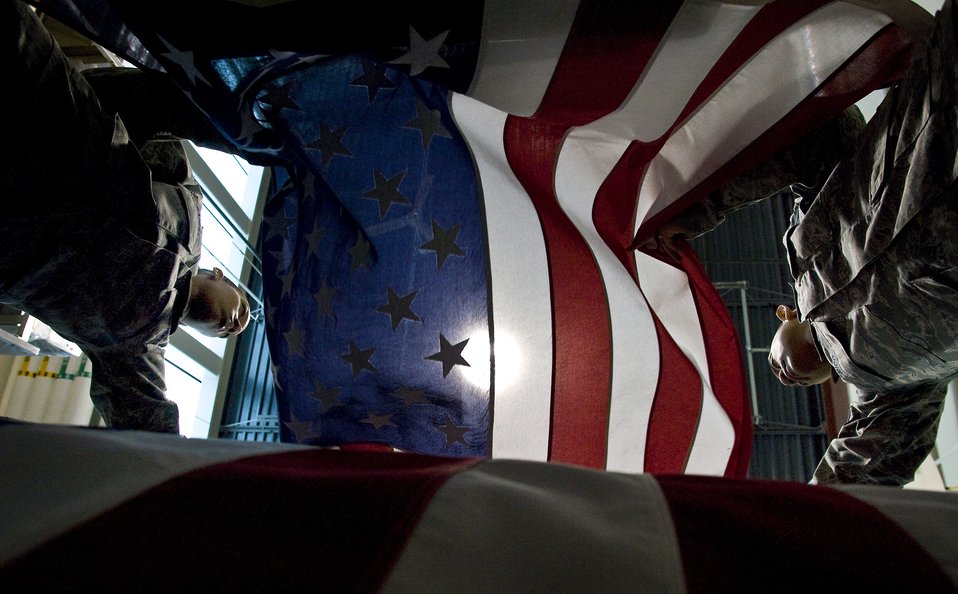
Dignified Transfer of Remains

Shipping specialists Staff Sgt. Star Samuels (left) and Tech. Sgt. Willard Rico place a U.S. flag over a casket March 31 during a dry run of shipping process procedures for the dignified transfer of remains at the Charles C. Carson Center for Mortuary Affairs, Dover Air Force Base, Del. The center is the Defense Department's largest joint-service mortuary facility and the only one in the continental United States. Sergeant Samuels is deployed from the 43rd Force Support Squadron at Pope AFB, N.C. Sergeant Rico is deployed from the 60th FSS, Travis AFB, Calif.